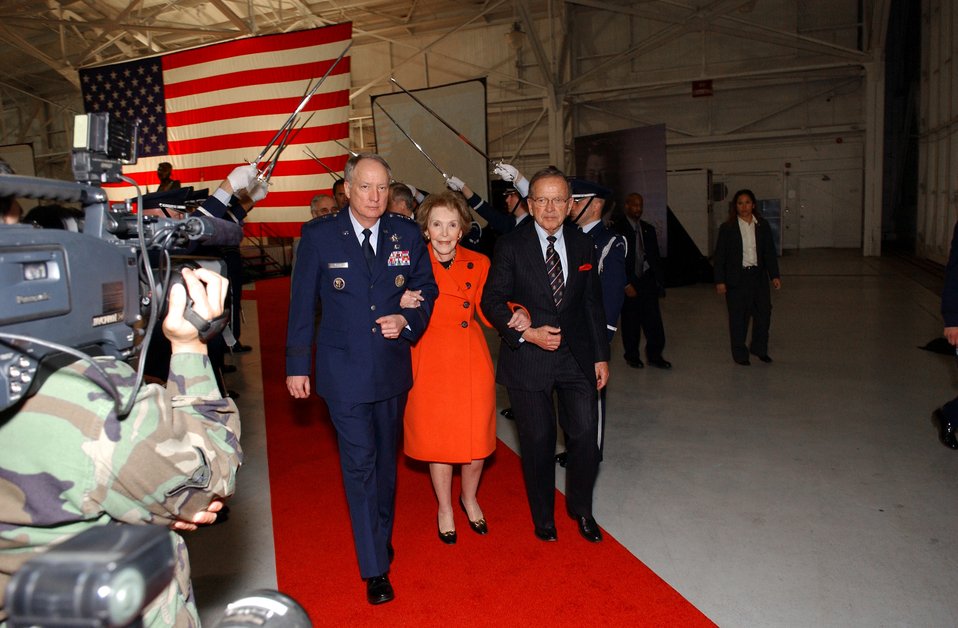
Dedication ceremony honors President Reagan

Former First Lady Nancy Reagan is escorted by Lt. Gen. Frank G. Klotz and Alaska Sen. Ted Stevens at the Ronald W. Reagan Missile Defense Site dedication ceremony on Monday, April 10, 2006. General Klotz is vice commander of Air Force Space Command.